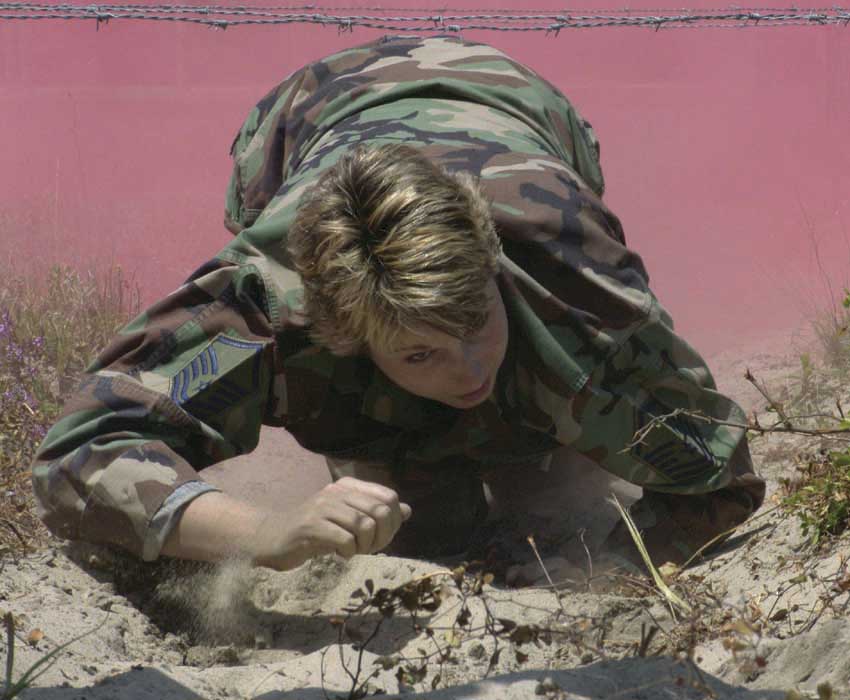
Warrior Day

EGLIN AIR FORCE BASE, Fla. -- Master Sgt. Stacy Esposito crawls through a cloud of red smoke during the Warrior Day obstacle course competition. She is assigned to the 96th Air Base Wing.